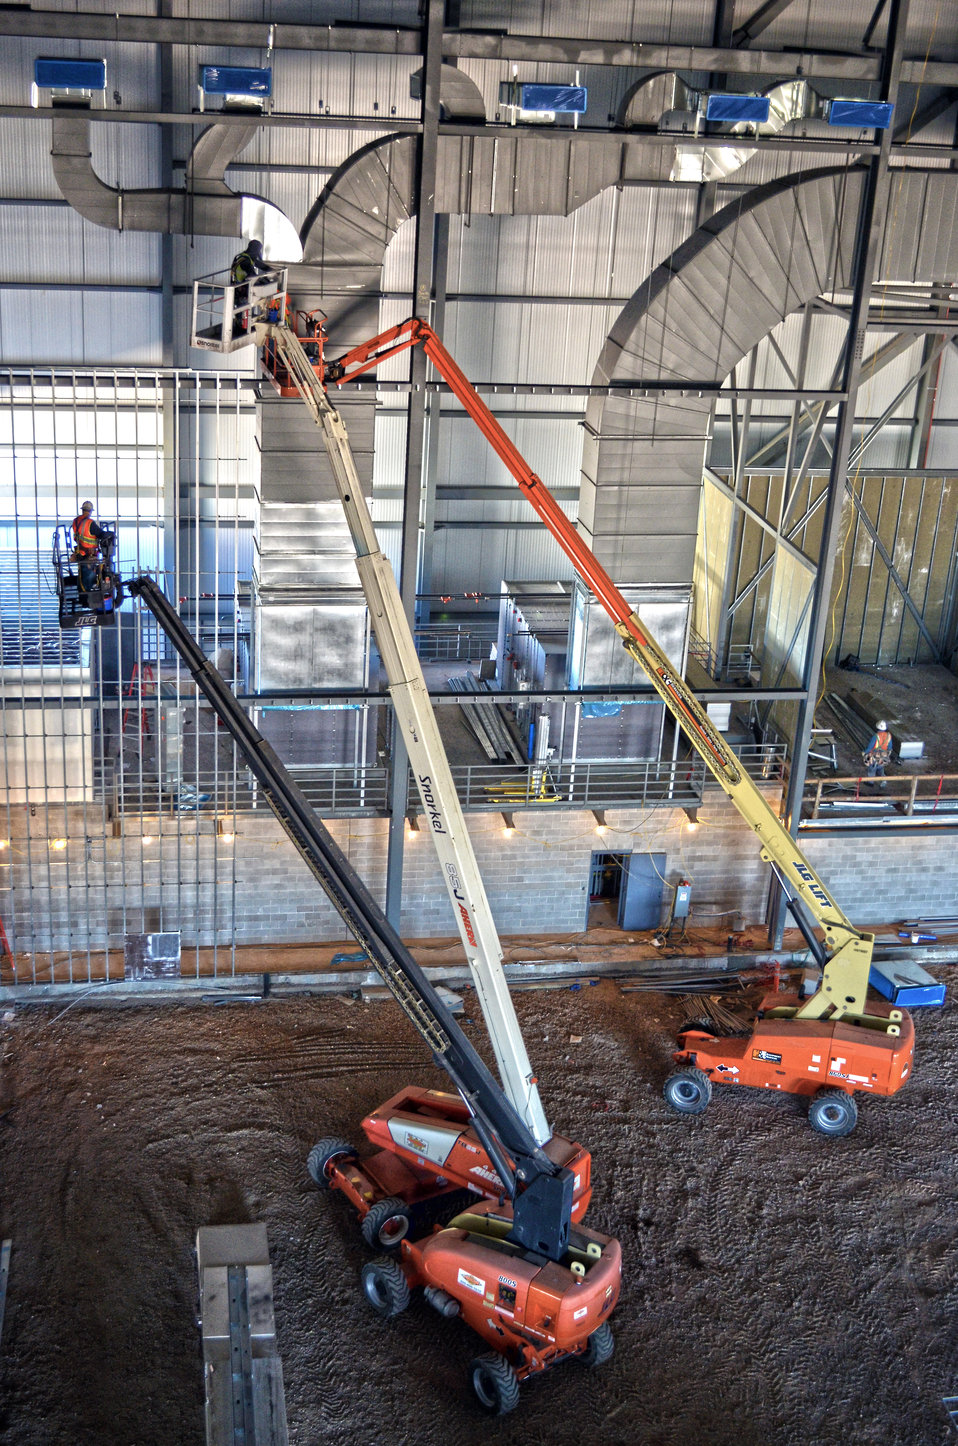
Radar Cross Section Test Facility at Hill Air Force Base

Contractors for the U.S. Army Corps of Engineers Sacramento District work on the testing chamber of the F-22 Radar Cross Section Test Facility at Hill Air Force Base, Utah, June 20, 2012. The 49,827-square-foot facility will used to test the radar signature of the F-22 and other aircraft to ensure that required levels of radar stealth are met.